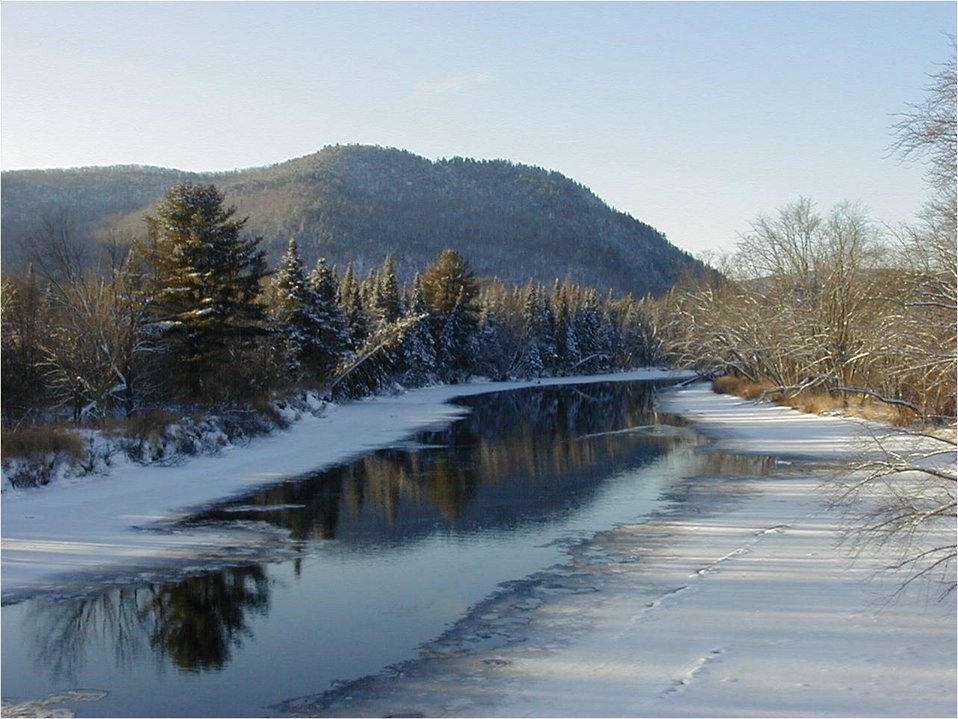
Magalloway River at Umbagog National Wildlife Refuge